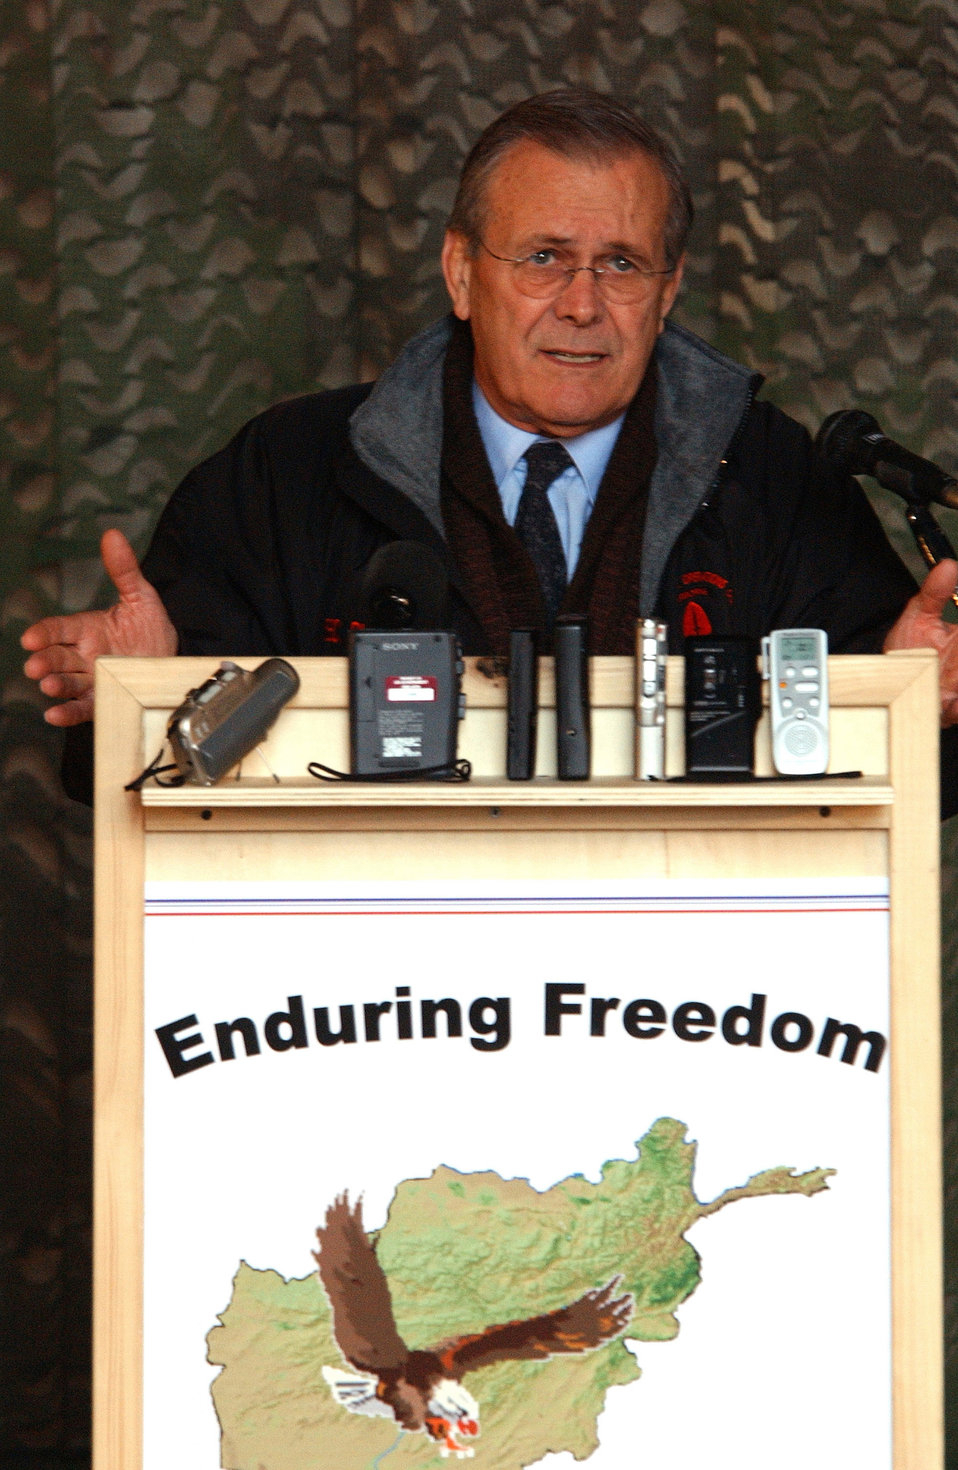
Rumsfeld

OPERATION ENDURING FREEDOM -- Secretary of Defense Donald H. Rumsfeld speaks to the members of Camp Stronghold Freedom in Uzbekistan while visiting troops deployed in support of Operation Enduring Freedom on Dec. 16